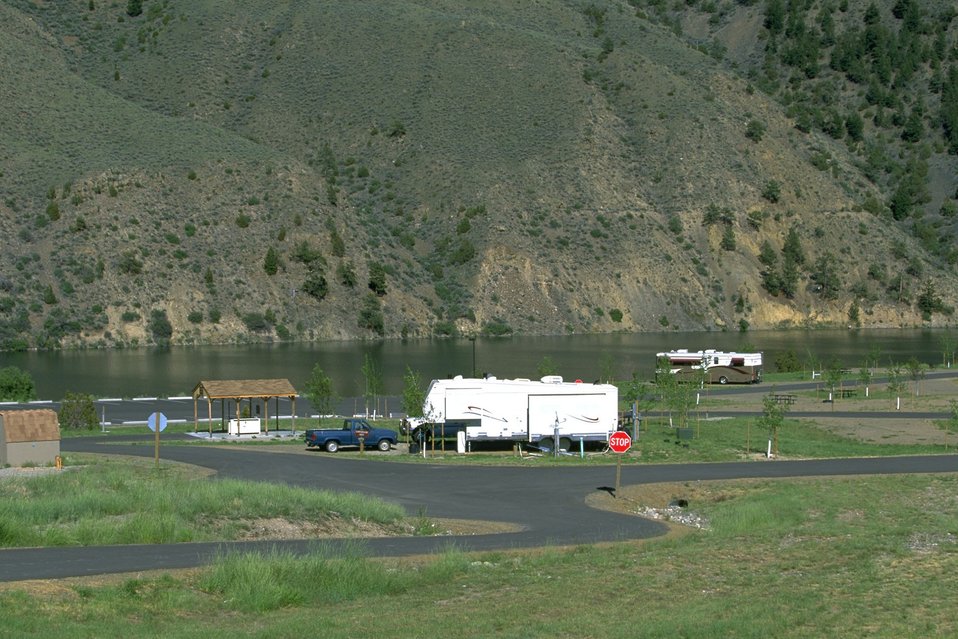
Campers at Devils Elbow Campground